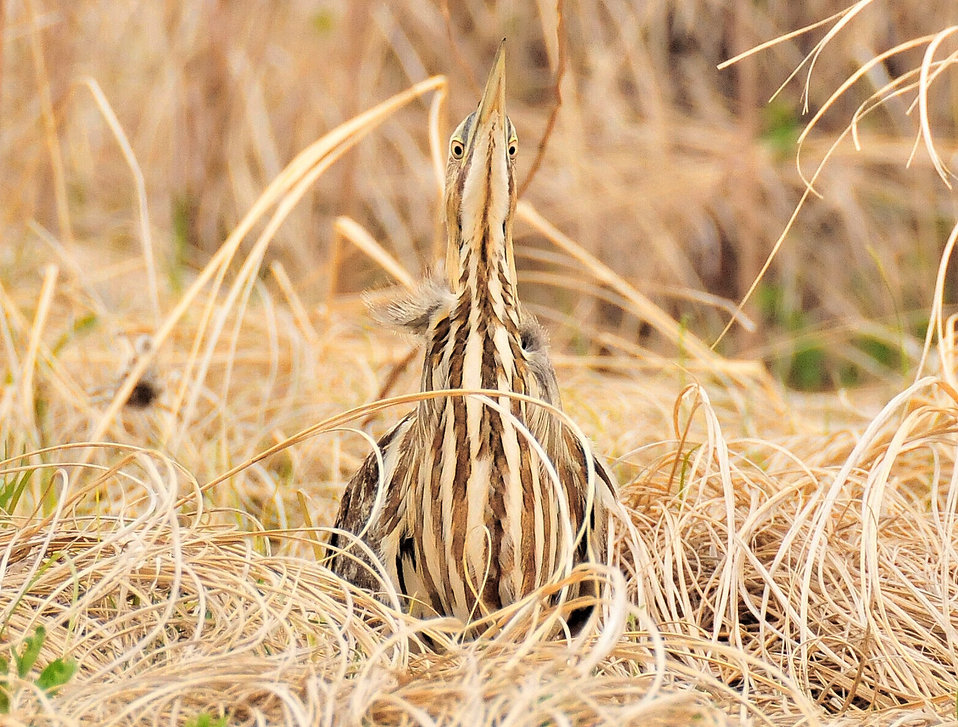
American Bittern on Lacreek NWR 2

The location and angle of the American Bittern's eyes allow it to point is head to the sky and still see what is going on front, below and all around.